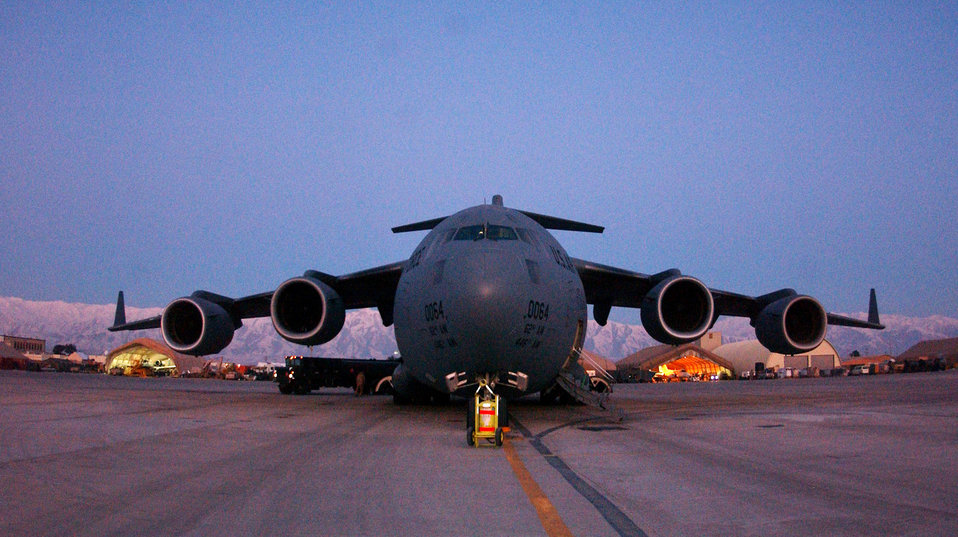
Airpower Summary for June 7, 2007

An Air Force C-17 Globemaster III awaits its next mission at a base in Southwest Asia. Coalition C-17s and C-130 Hercules aircraft flew 132 airlift sorties June 7 and delivered 1.5 million pounds of cargo.